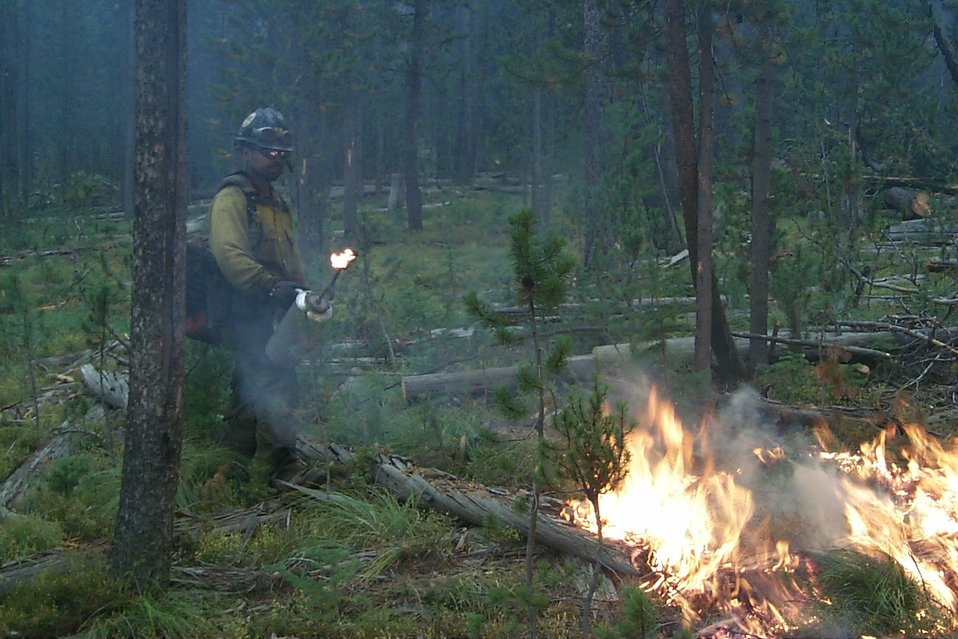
Controlled burn Fire Clearwater Fire Salmon Field Office USRD Upper Snake River District